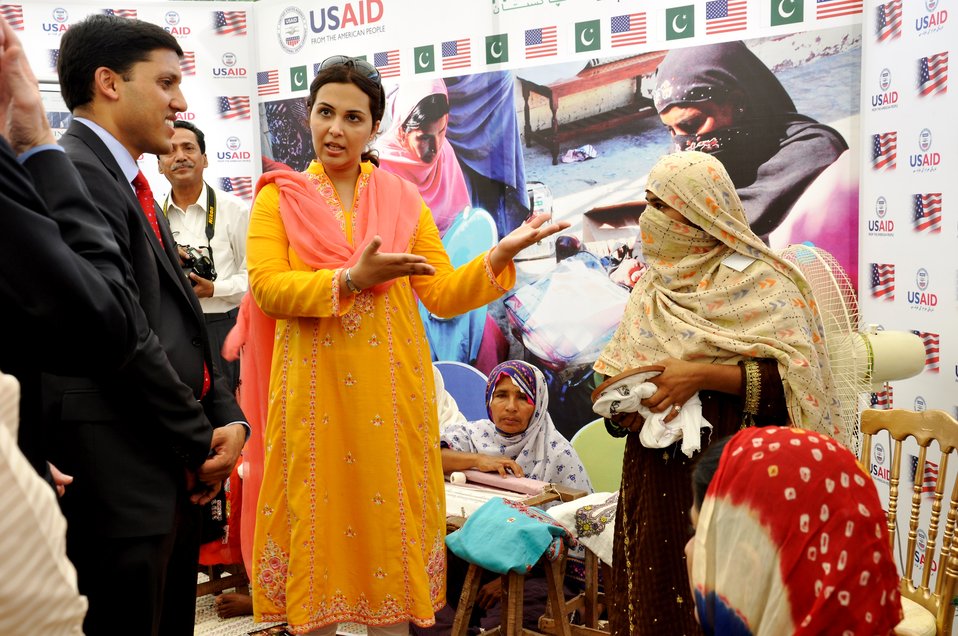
Dr. Rajiv Shah visiting Entrepreneurs project stalls